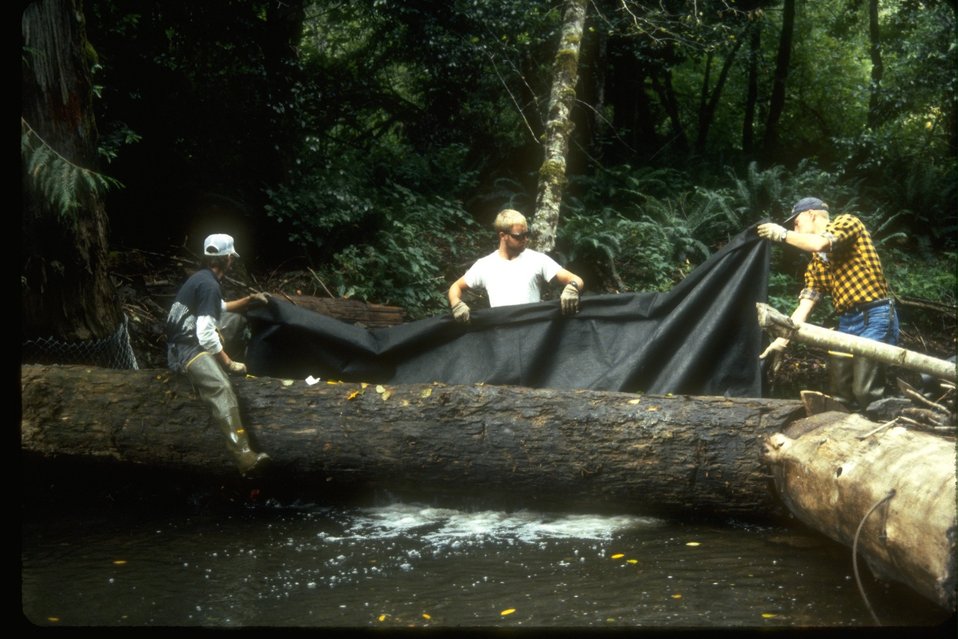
The building of a fishery, an instream structure.